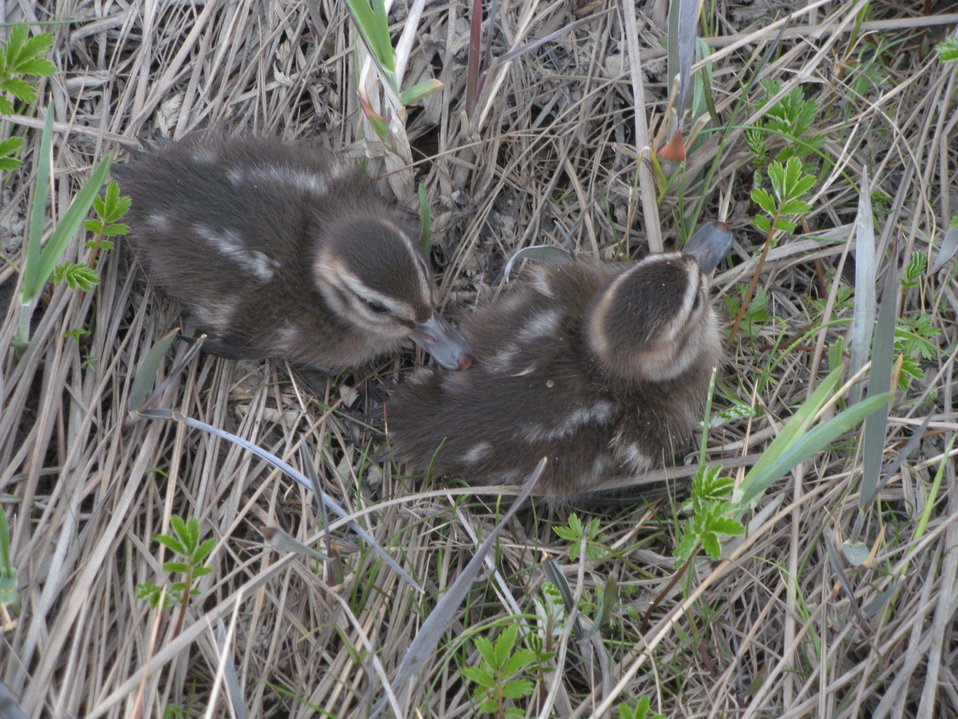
Pintail ducklings

Yukon Delta NWR